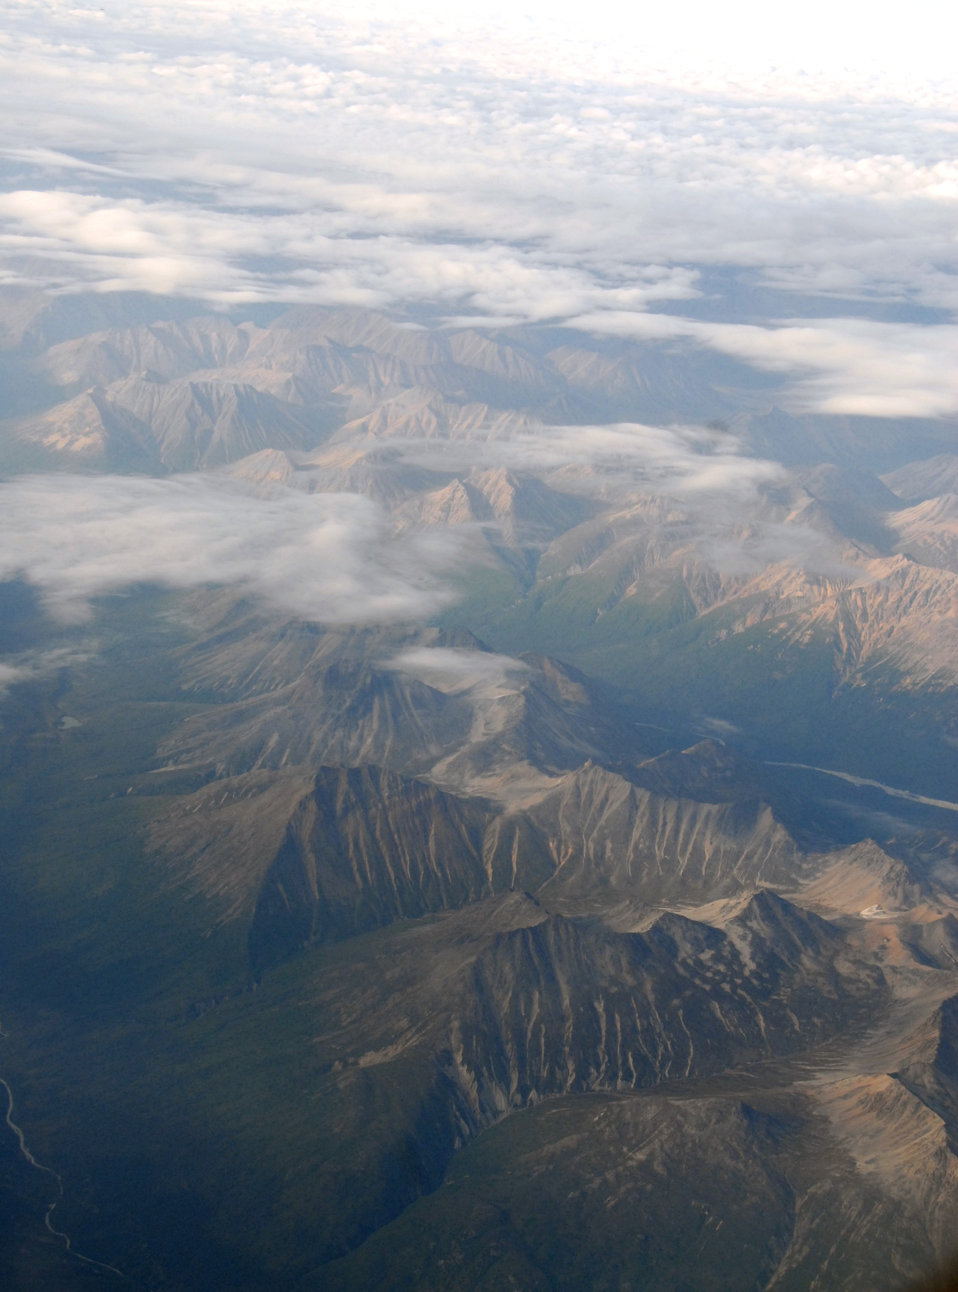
Rural Tour 0376

Rural Tour Alaska Aug 2009